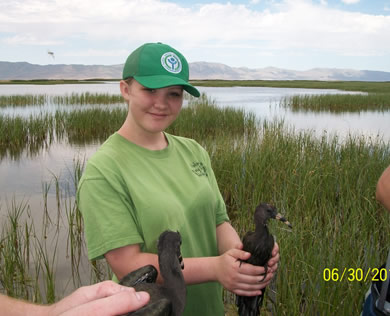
YCC Participant Holds a White-faced Ibis

Youth Conservation Corps crew assist with research by Weber State University on White-Faced Ibis, one of the many bird species at Bear River Migratory Bird Refuge.